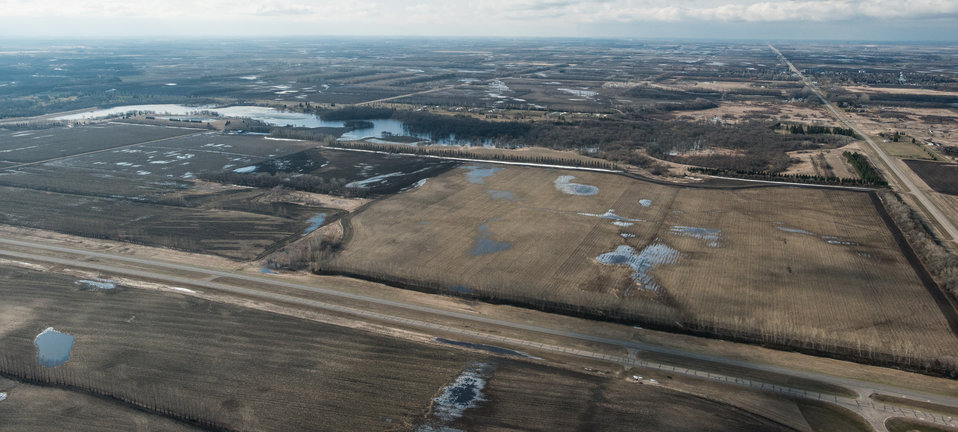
Larimore Dam, a Public Law PL83-566 Small Watershed Program, in Grand Forks County, ND, on Wednesday, May 1, 2013. To learn about the Red River Basin Initiative, see www.mn.nrcs.usda.gov/news/features13/RRBI.html USDA Photo by Lance Cheung.